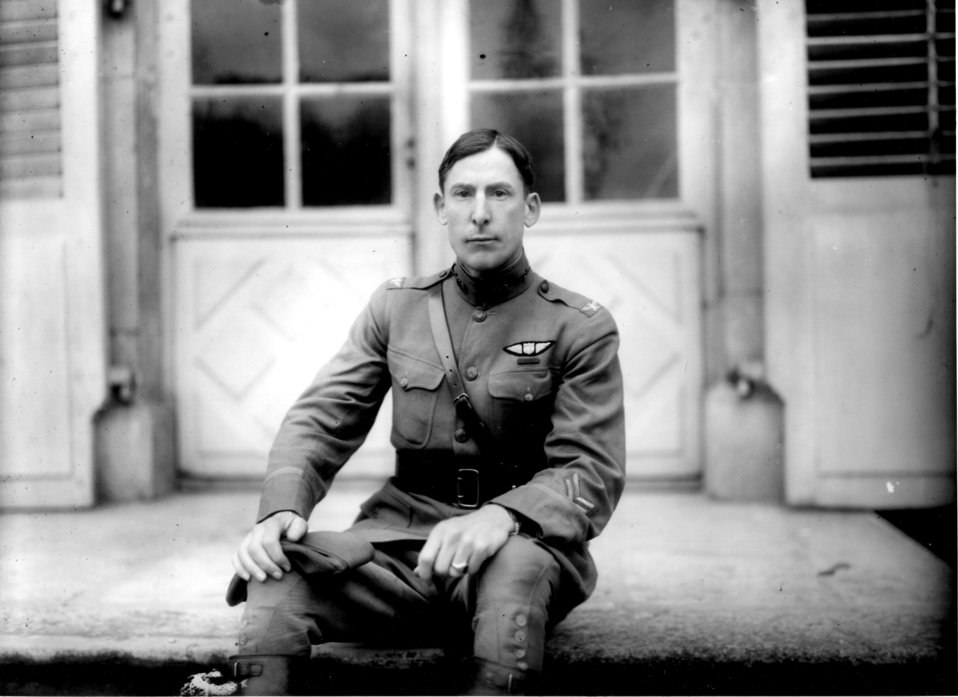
Frank Lahm

EARLY YEARS -- Col. Frank Lahm, the first man to be rated a pilot in the U.S. military service, flew with Orville Wright in the first cross country flight.